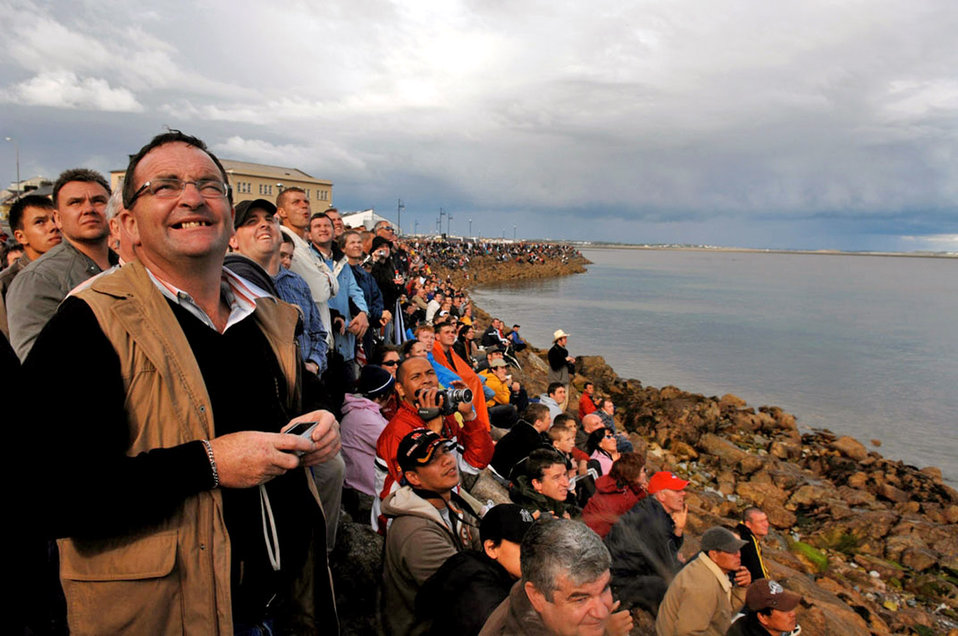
Thunderbirds begin European good-will tour

Crowds watch as the Air Force Thunderbirds fly overhead at the Salthill Air Show in Galway, Ireland, June 24. This is the first time the Thunderbirds have performed over Irish soil. More than 100,000 people attended the air show, which was the team's first stop on their 2007 European Goodwill Tour.